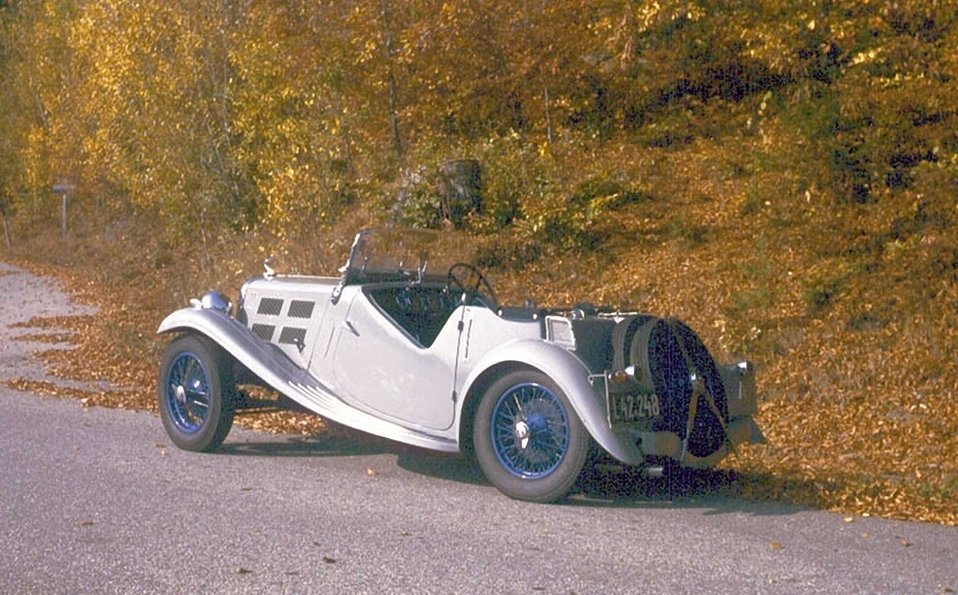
veränderte Version von Image:1936TriumphGloriaSouthernCross4Zyl.jpg - dort PD